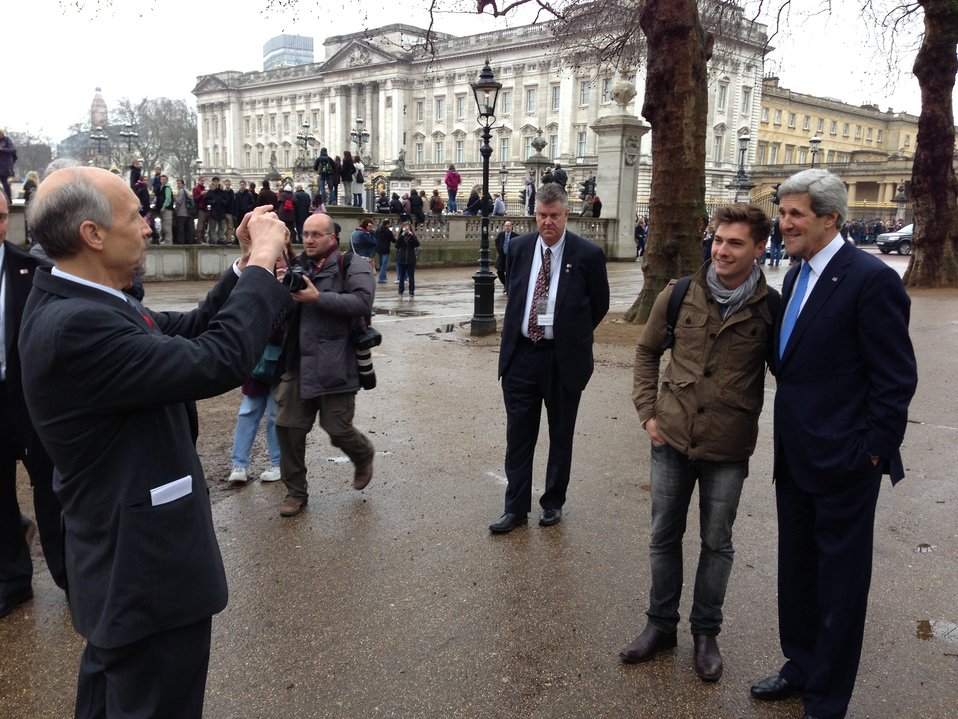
Secretary Kerry Poses for a Photo with a Tourist from Argentina at Buckingham Palace

U.S. Secretary of State John Kerry poses for a photo with a tourist from Argentina after watching the changing of the Guard at Buckingham Palace during a break in the G8 ministerial meetings in London, United Kingdom, April 11, 2013.